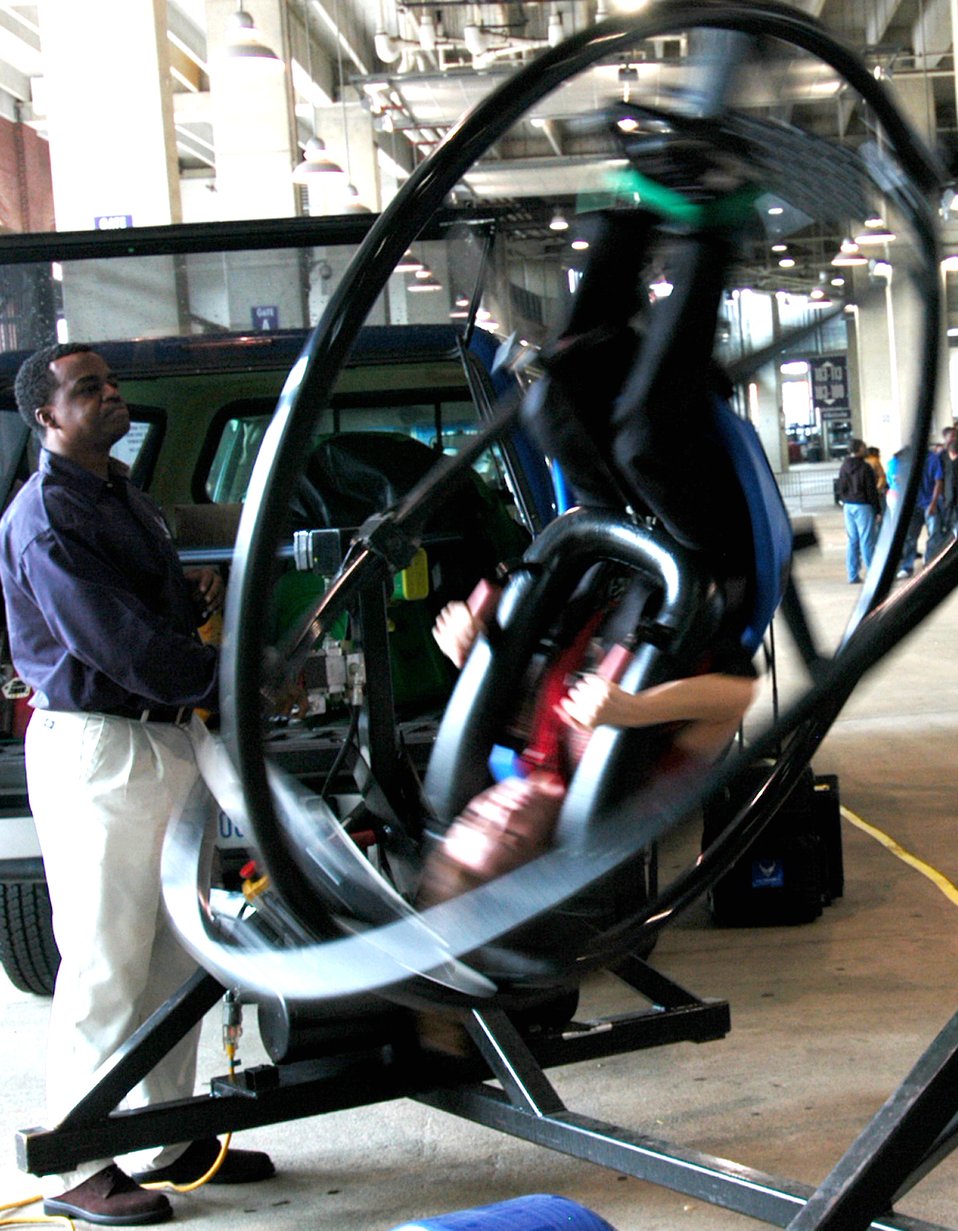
General shares game plan for success

Staff Sgt. Brian Anderson takes Michelle Clark for a spin on the Air Force gyro ride while Staff Sgt. Ty Lopez speaks with a potential recruit Nov. 8 at Baltimore's M&T Bank Stadium. The 317th Recruiting Squadron worked special attractions at the Air Force-sponsored iHigh Great American Rivalry Series high school football game between 119-year rivals, the Baltimore Polytechnic Institute Engineers and City College Knights. The Air Force has sponsored this historic contest for the past three of five years in partnership with the iHigh. The Air Force raised the sponsorship level by awarding college scholarships, trophies and high-quality ball caps to the winning team, and featured special attractions for game fans.